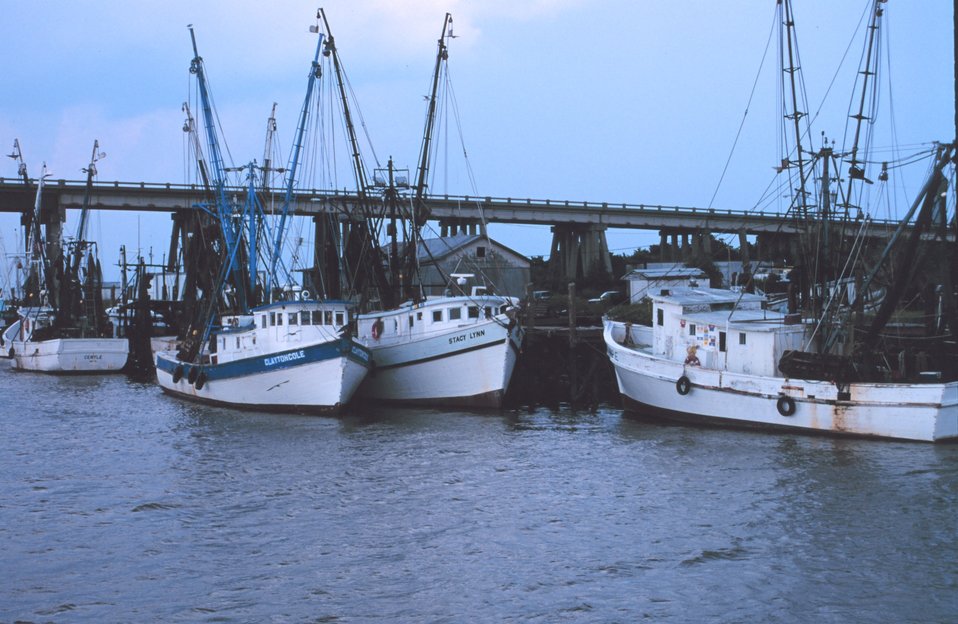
Shrimpers tied up at the Lazaretto Creek Bridge